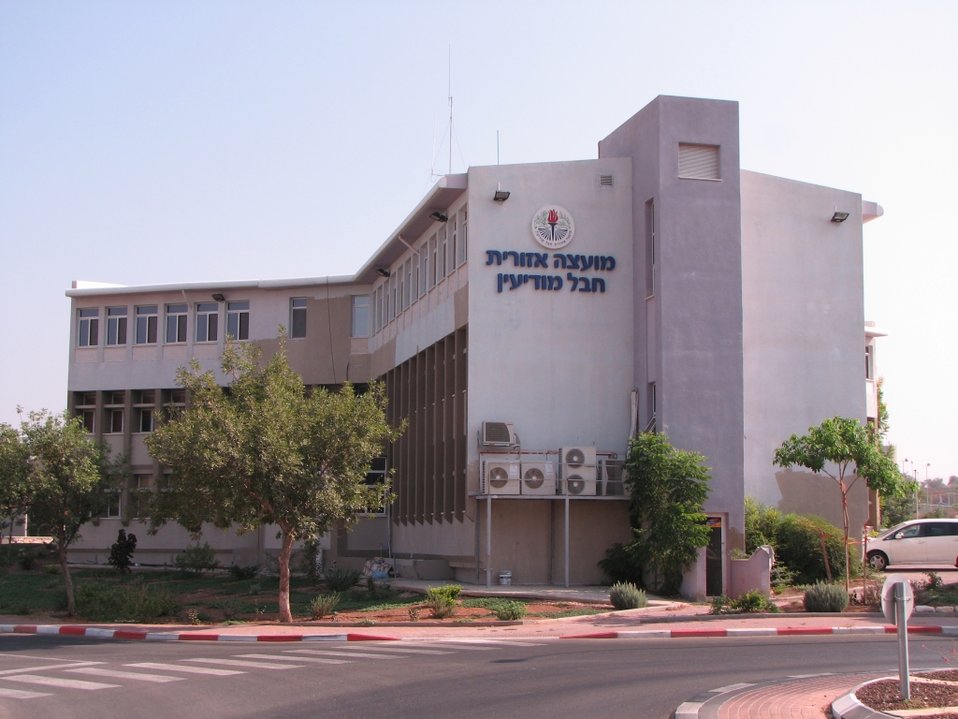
עברית: מועצה אזורית חבל מודיעין